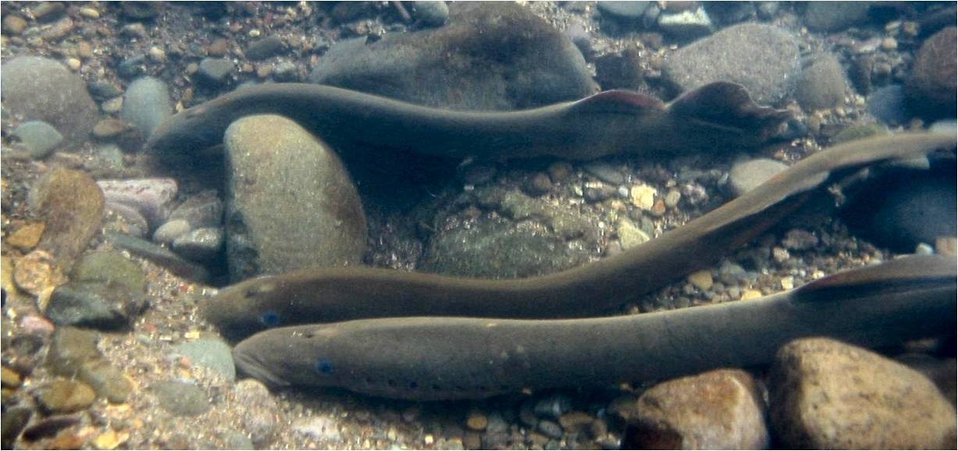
3 adult lampreys